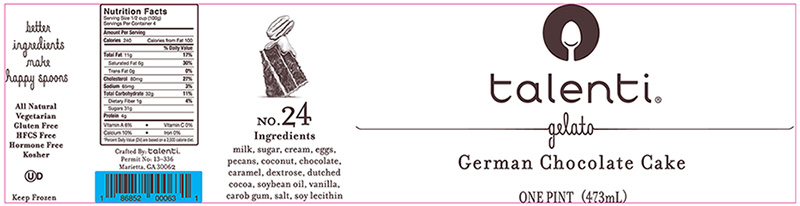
RECALLED – Talenti German Chocolate Cake Gelato

September 09, 2013 – Product Recall – Talenti® Gelato & Sorbetto Issues an Allergy Alert for Undeclared Allergen (Almonds) in Talenti German Chocolate Cake Gelato Pints.